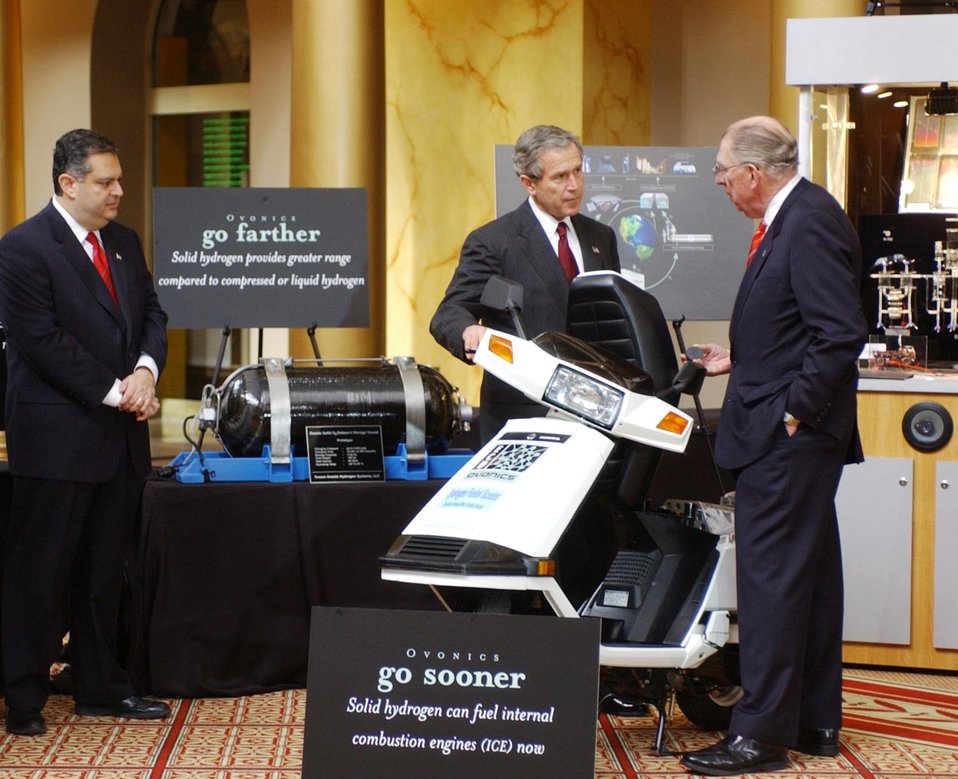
PRESIDENT BUSH AND SECRETARY ABRAHAM BEING BRIEFED ON THE ECD OVONICS SCOOTER THAT RUNS ON SOLID HYDROGEN FUEL.

AS PART OF THE FREEDOMCAR (COOPERATIVE AUTOMOTIVE RESEARCH) AND FUEL INITIATIVE, THE CLEAN AIR FOR THE 21ST CENTURY EXHIBIT AT THE NATIONAL BUILDING MUSEUM, 2-6-03, SHOWED EXAMPLES OF INDUSTRY PARTNERING WITH GOVERNMENT TO DEVELOP EFFICIENT HYDROGEN FUEL CELLS. THE EXHIBIT INCLUDED VEHICLES, CELL PHONES, LAP TOP COMPUTERS AND CAMERAS THAT CAN BE POWERED BY HYDROGEN FUEL CELLS.